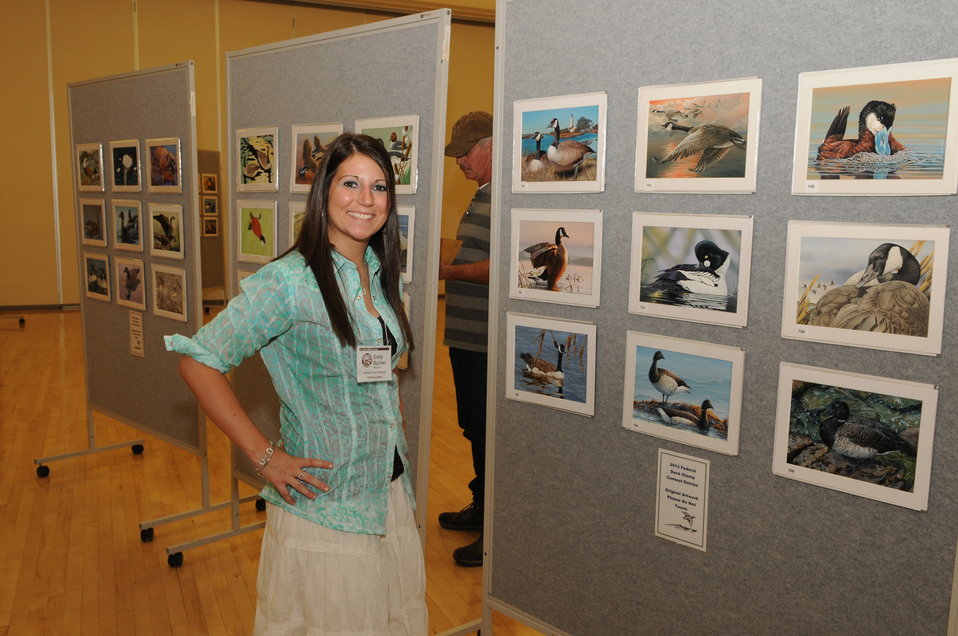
Artwork Viewing

The U.S. Fish & Wildlife Service sponsored the 2012 Federal Duck Stamp Art Contest September 28 and 29 in Ogden, Utah, at Weber State University. A panel of five judges was responsible for choosing the art work used to design the 2013-2014 Migratory Bird Hunting and Conservation Stamp.